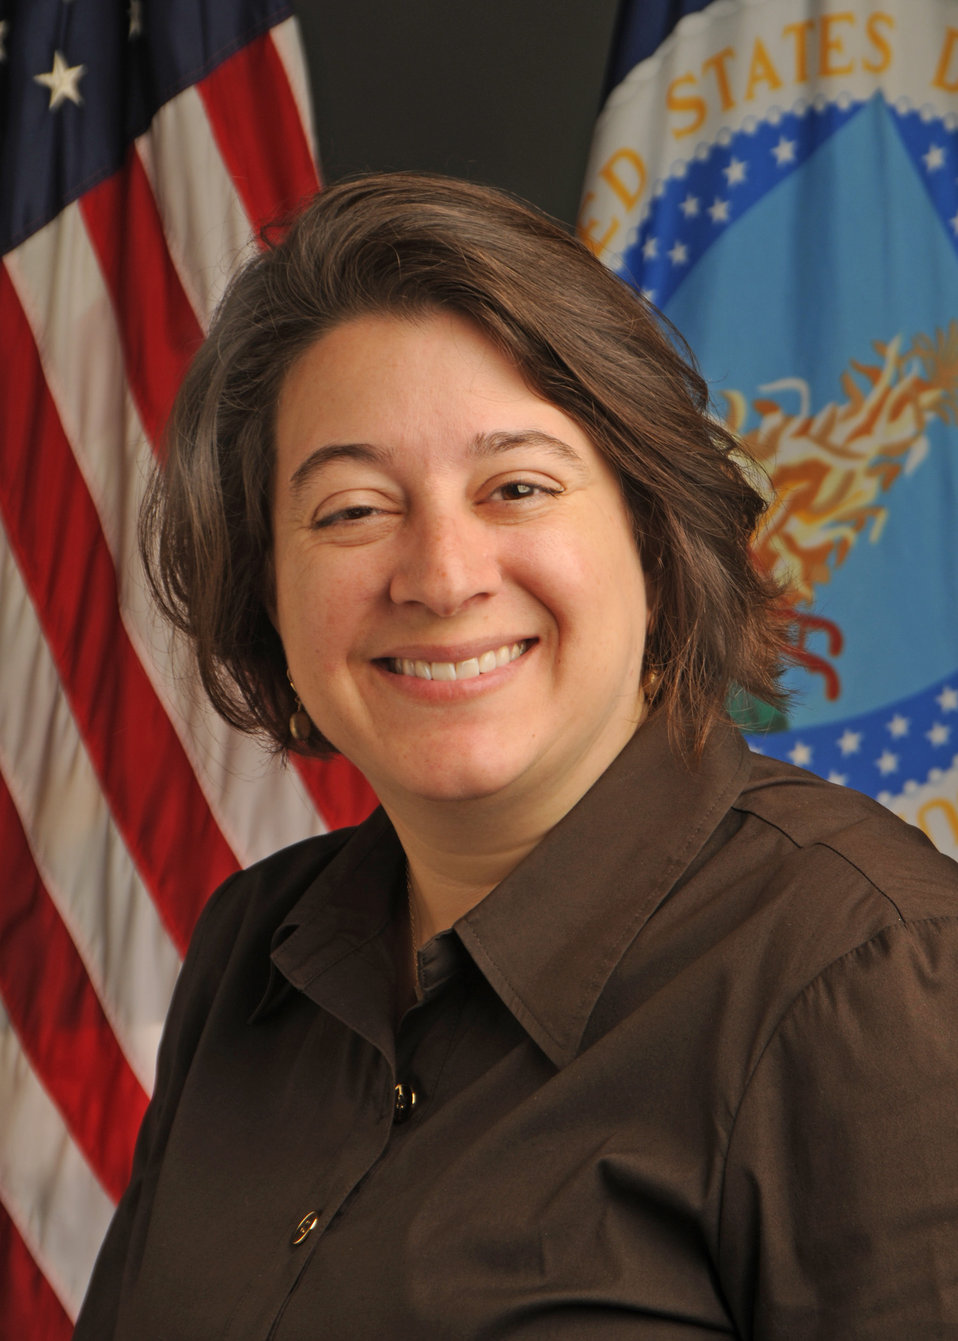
10di1105-0014 Senior Advisor to the Secretary of Agriculture Sarah Bittleman

Portrait Sarah Bittleman Senior Advisor to the Secretary of Agriculture.